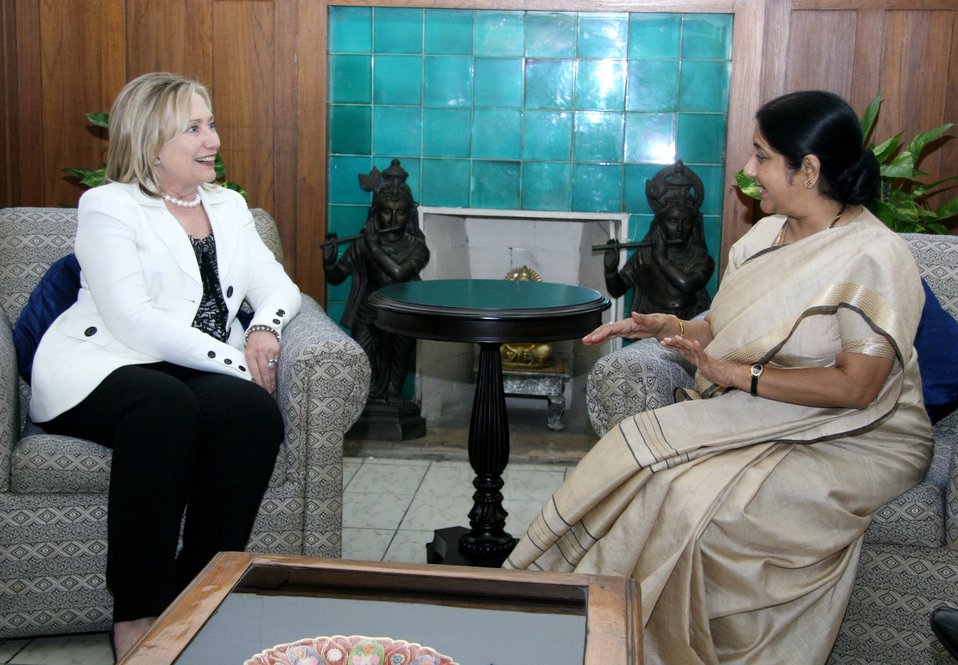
Secretary Clinton Meets With India's Opposition Leader Swaraj

U.S. Secretary of State Hillary Rodham Clinton meets with India's opposition leader, Sushma Swaraj, in New Delhi, India, on July 19, 2011.